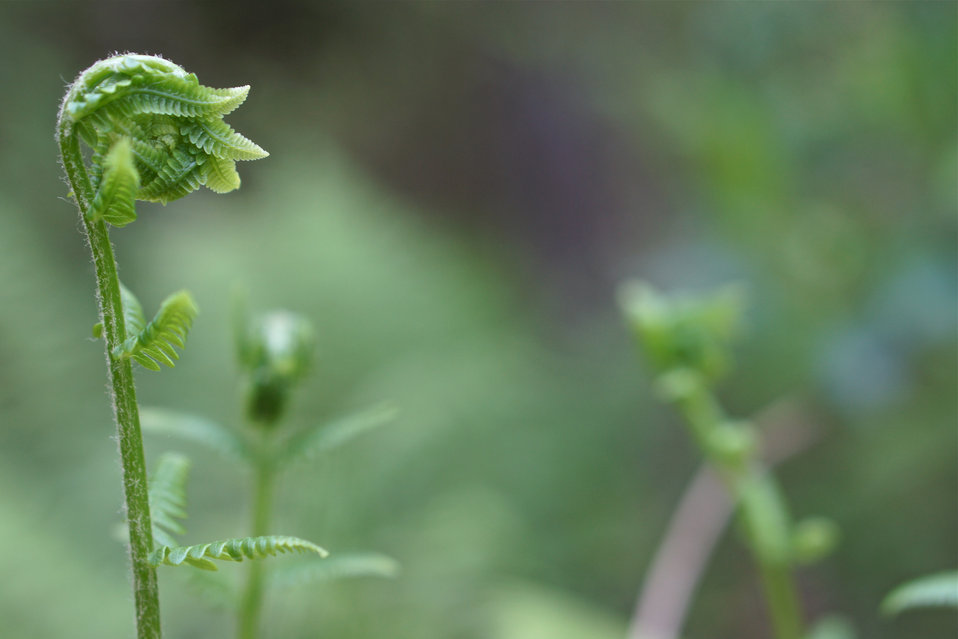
Fiddlehead

In May, bog conservationists from Tennessee, North Carolina, and Georgia convened in the north Georgia mountains for the spring, 2014 meeting of the Bog Learning Network. The event provided an opportunity for biologists to see, first hand, the result of management efforts at two north Georgia bogs. More importantly, the outings provided an opportunity to share innovative approaches to bog management, such as the role of the Georgia Plant Conservation Alliance in conserving rare plants and coordinating a cadre of volunteers to work on bog management.

The Bog Learning Network was convened in the winter of 2013 as a way to bring together people working for bog conservation across the Southern Appalachians. Southern Appalachian bogs are one of North America’s rarest habitats and home to many rare plants and animals.